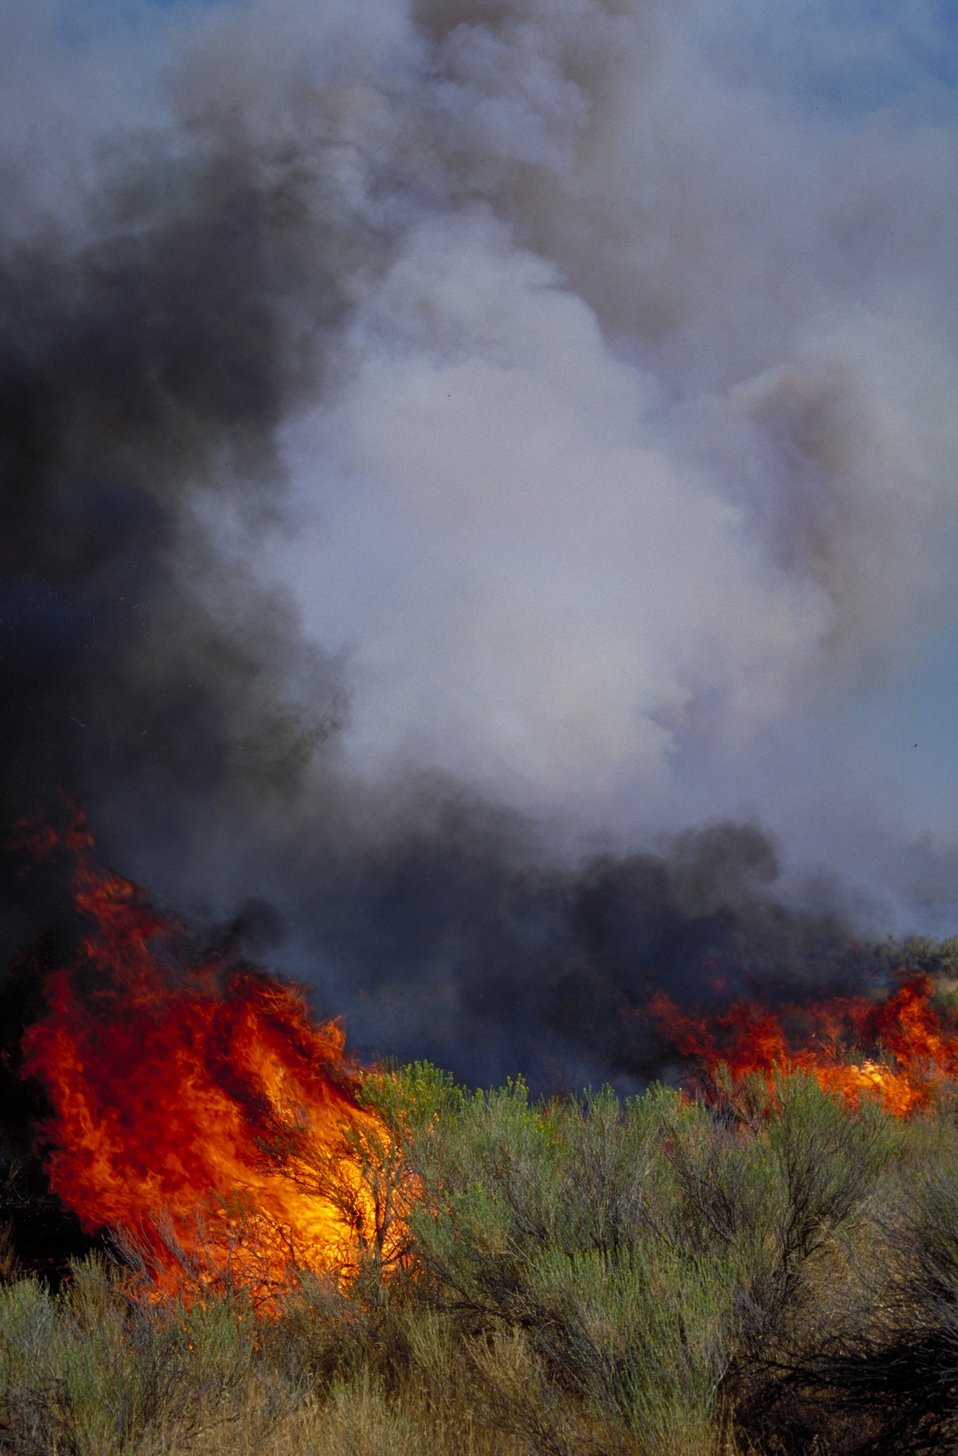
Smoke and fire Fire Season 2000 Lower Snake River District LSRD